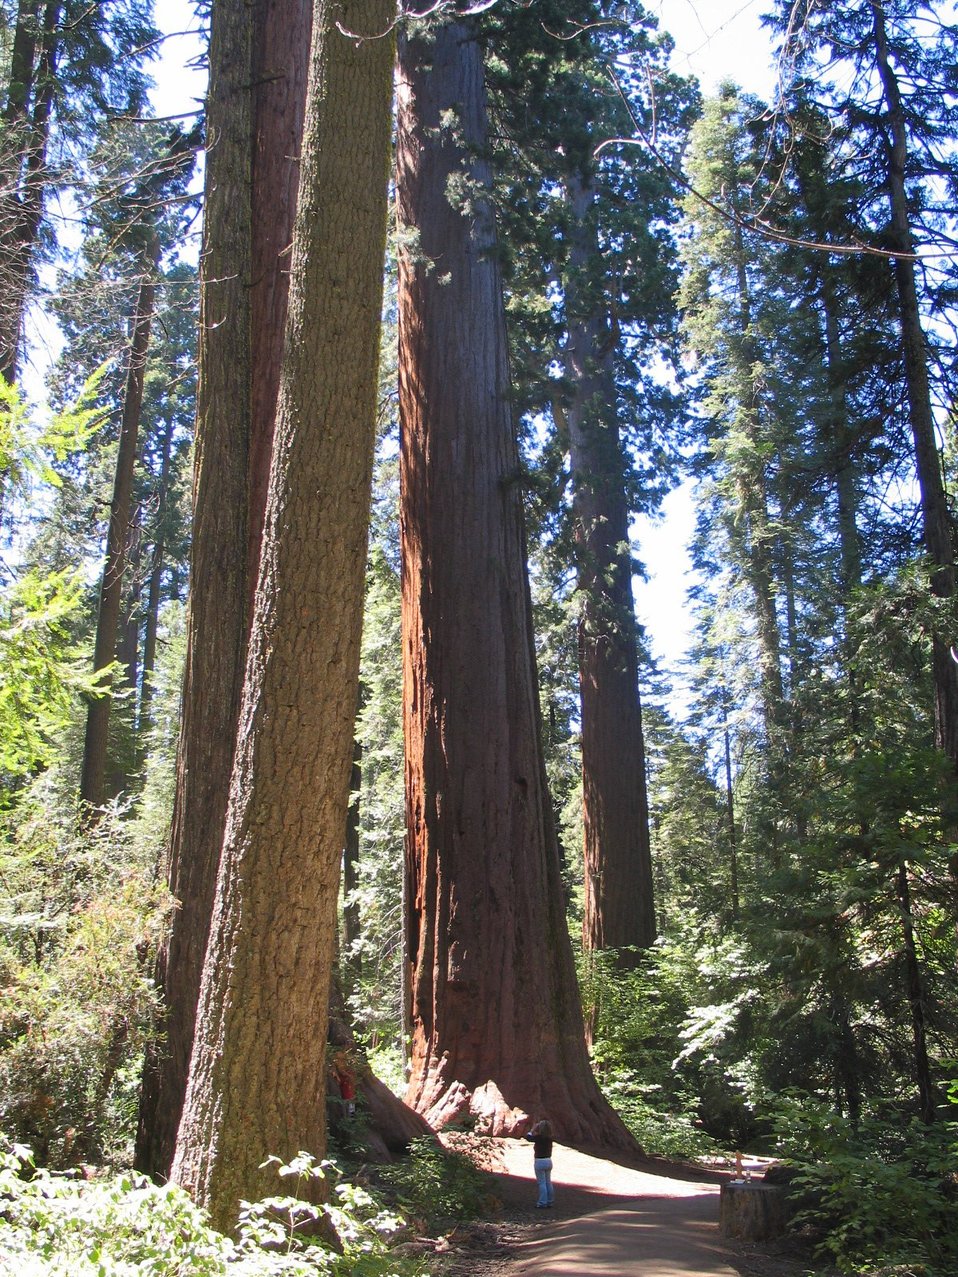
Calaveras Big Trees State Park — in the western Sierra Nevada, Calaveras County, California. Trail through a grove of Sequoiadendron giganteum (Giant Sequoia) trees (orange bark, center), with Pinus lambertiana (brown bark, left).
Photo By John J. O'Brien 28 AUG 2005.